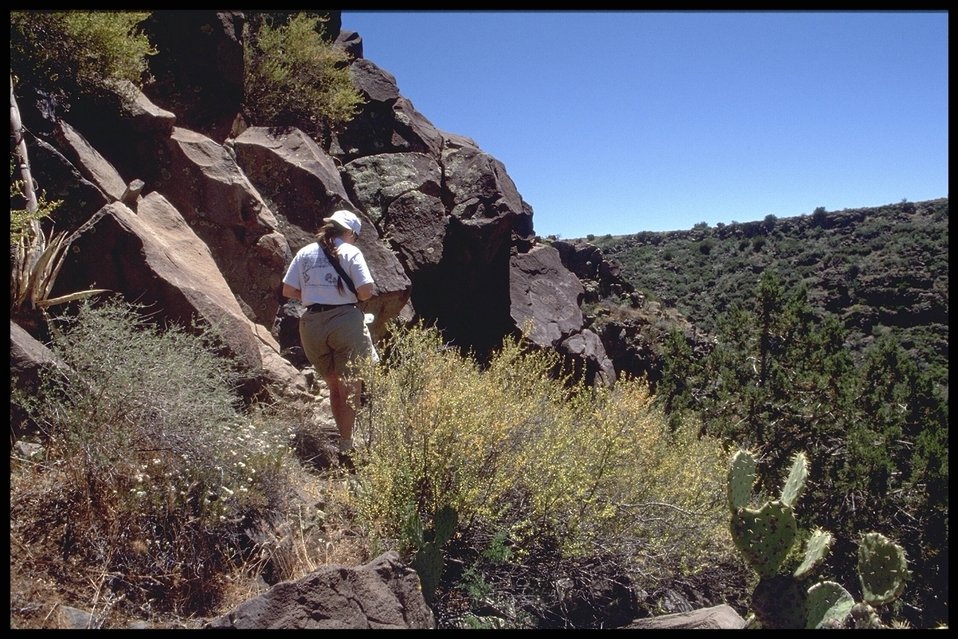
The Agua Fria National Monument is only 40 miles outside of Phoenix. It can be accessed by taking Interstate 17 to Badger Springs or Bloody Basin Road. There are great photo opportunities and interesting places to explore.